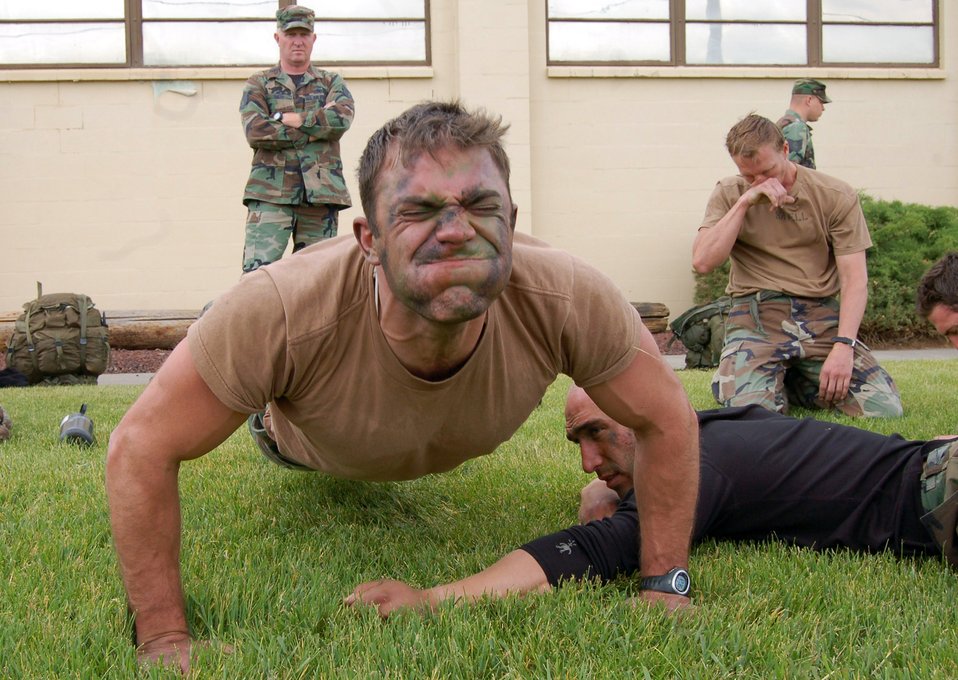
Ready for the challenge

Staff Sgt. Matthew Zimmer pumps out as many push-ups as he can during the physical fitness portion of the Survival, Evasion, Resistance and Escape Challenge June 13 at Fairchild Air Force Base, Wash. The challenge, open to all Guardian Angel Weapon System personnel, includes SERE specialists, combat rescue officers and pararescuemen. Sergeant Zimmer and Staff Sgt. Michael Garcia, both SERE instructors and water survival specialists, were the winners of SERE Challenge.